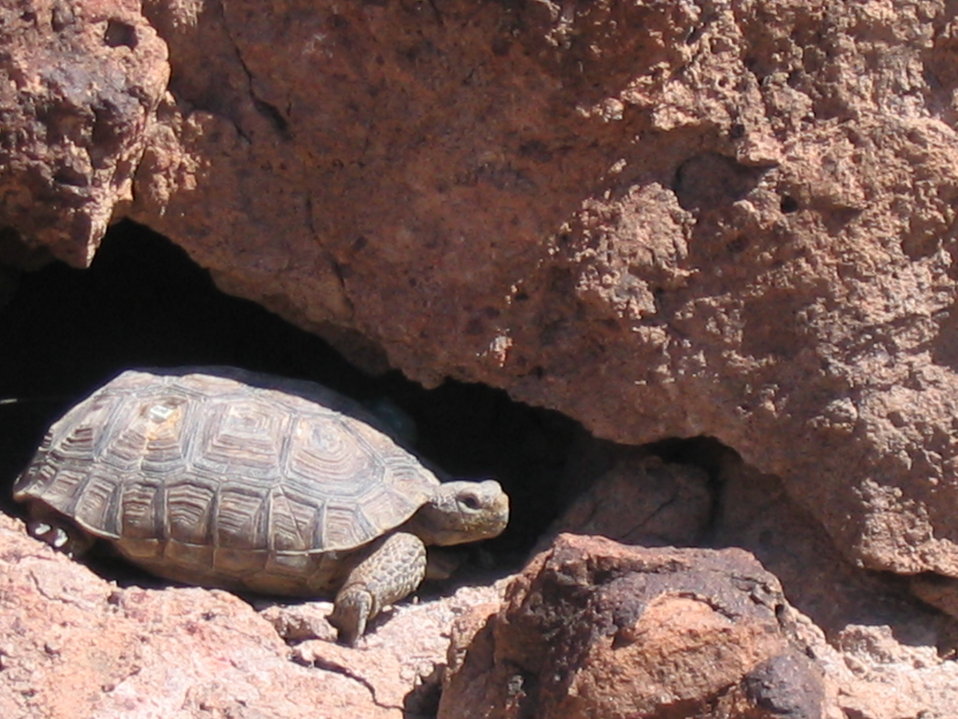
Mojave Desert Tortoise (Gopherus agassizii)

Desert tortoise (Gopherus agassizii) commonly known as the Mojave desert tortoise.